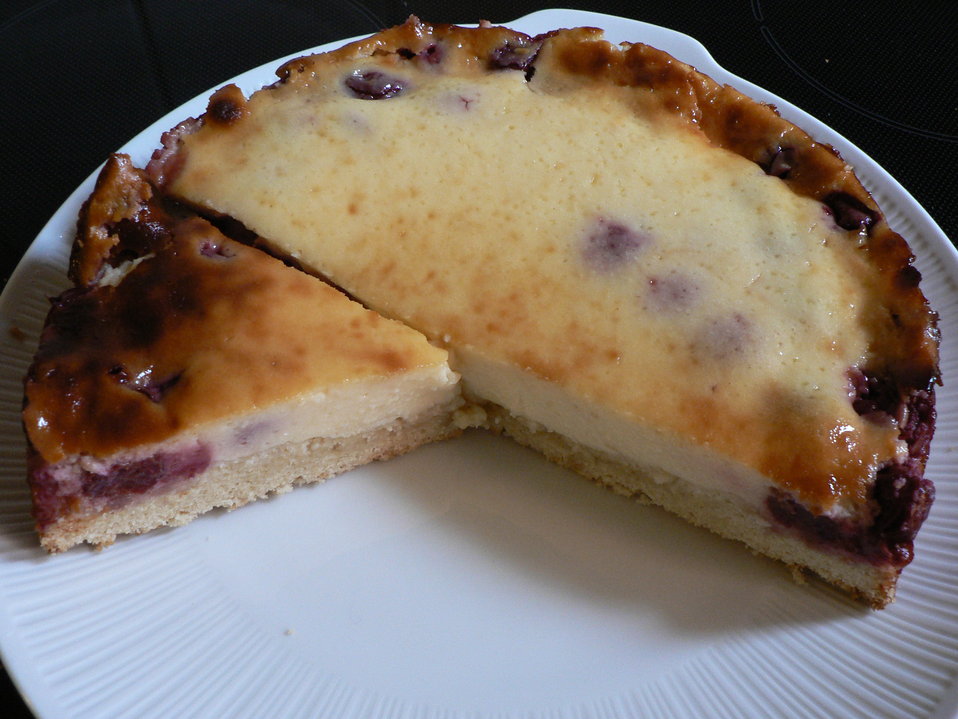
Nederlands: zelfgemaakt